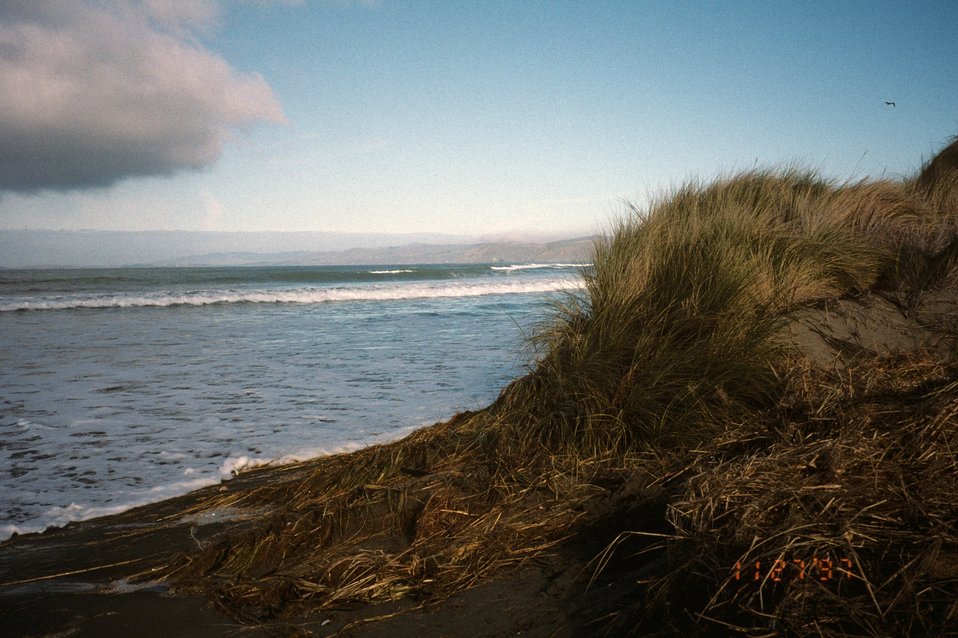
Dillon Beach